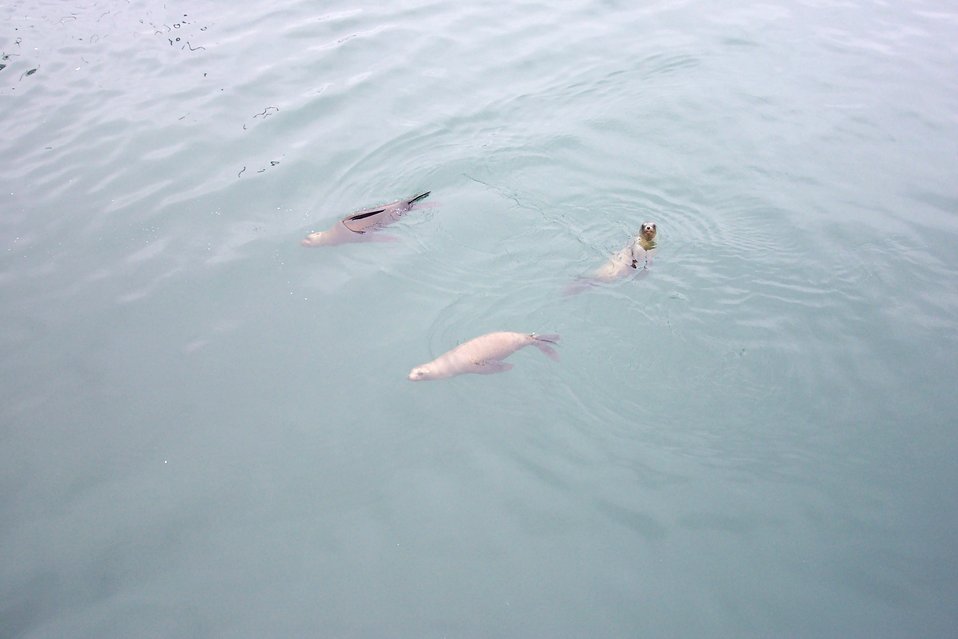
Sea lions swimming near Fisherman's Wharf, Monterey.